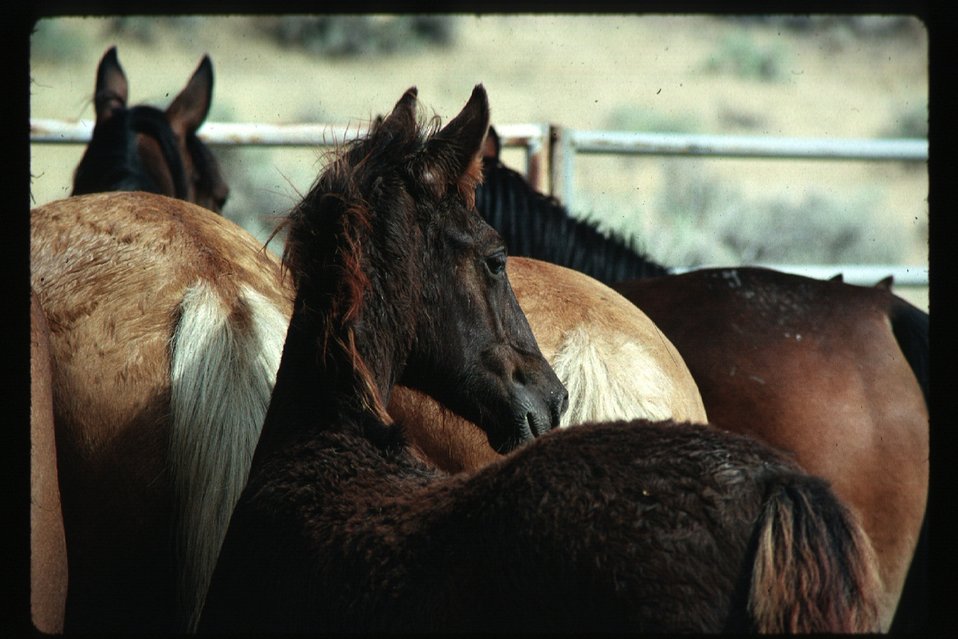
Wild horse corral Wild Horse and Burro Adoption Program LSRD Lower Snake River District